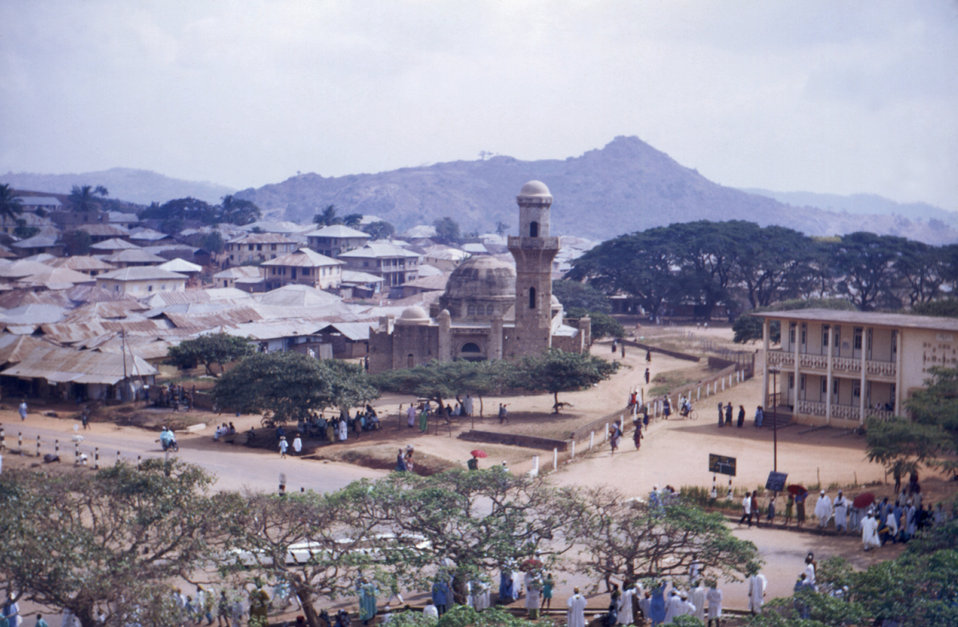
This 1969 photograph is overlooking a village in Dekina, Nigeria, which was the site of a smallpox outbreak of that year.